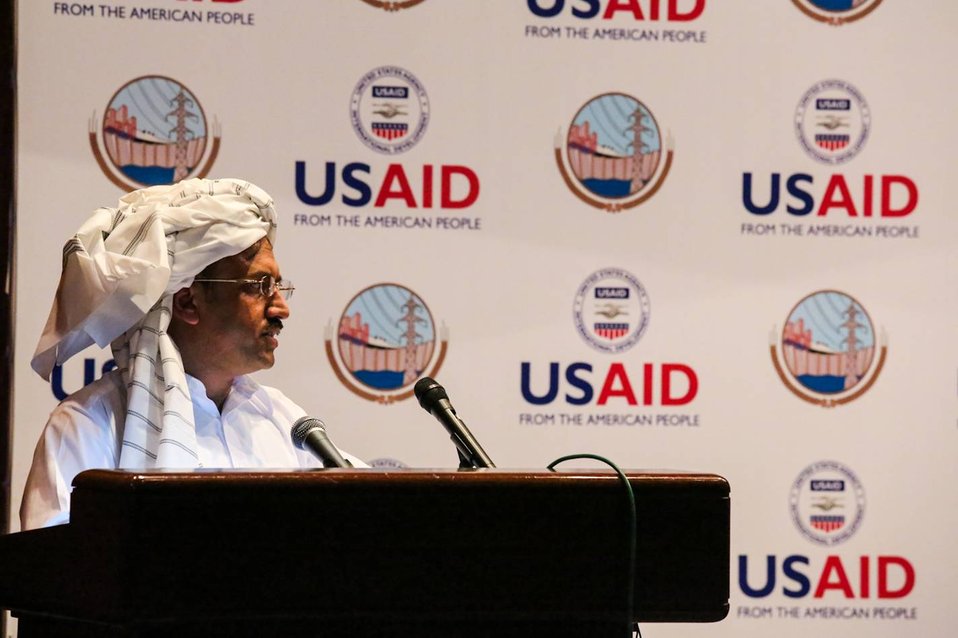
Islamabad, September 12, 2012 - Project Launch Ceremony of Waran Canal Irrigation System